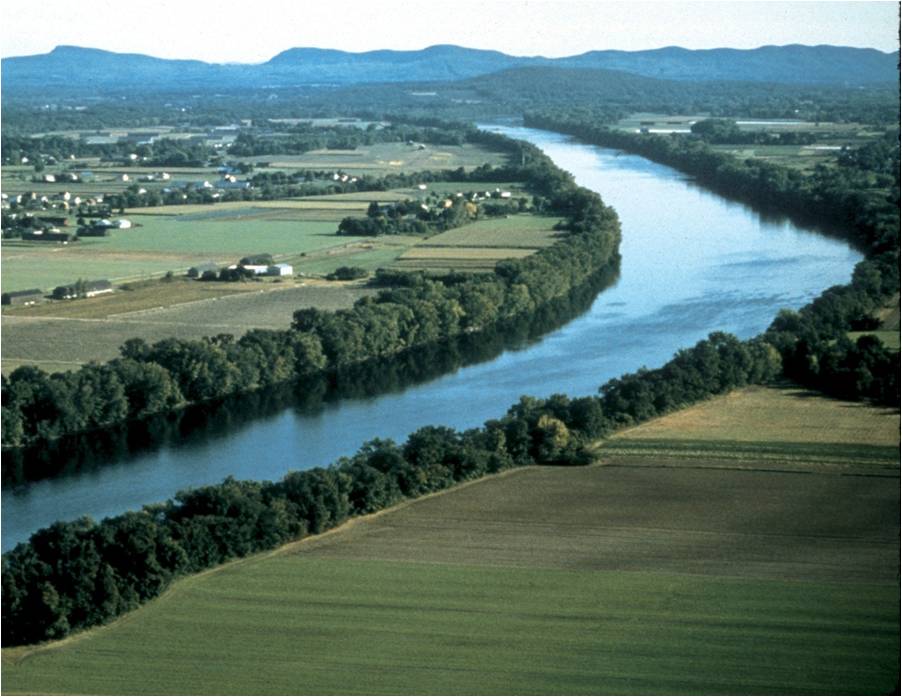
Connecticut River, Sunderland, MA